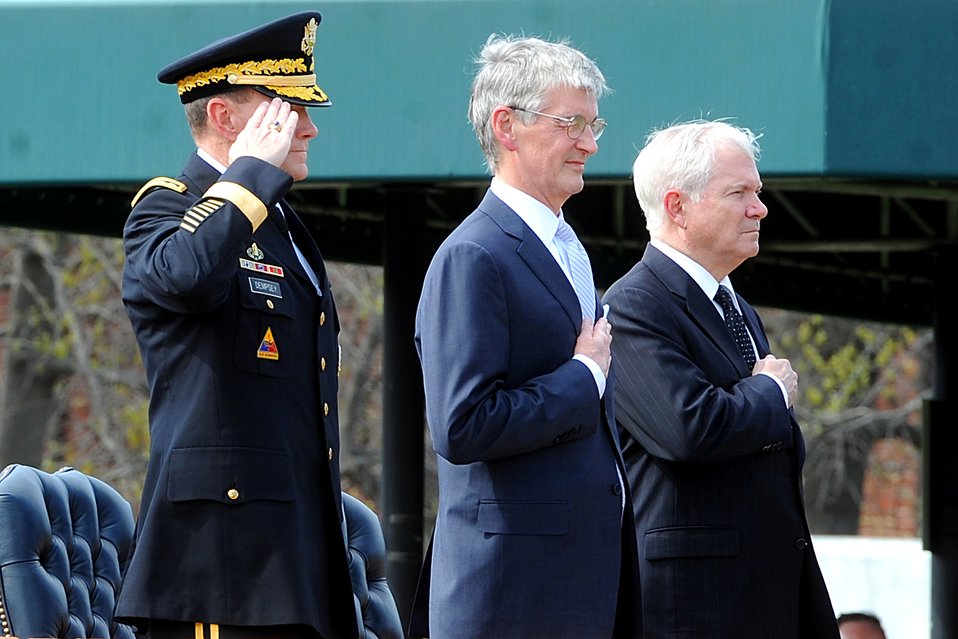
Army chief of staff swearing in

From left, Army Gen. Martin E. Dempsey, Army Secretary John M. McHugh and Defense Secretary Robert M. Gates render honors during the playing of the national anthem at the swearing-in ceremony for General Dempsey April 11, 2011, on Fort Myer, Va. General Dempsey replaced Gen. George W. Casey Jr. as the Army chief of staff.